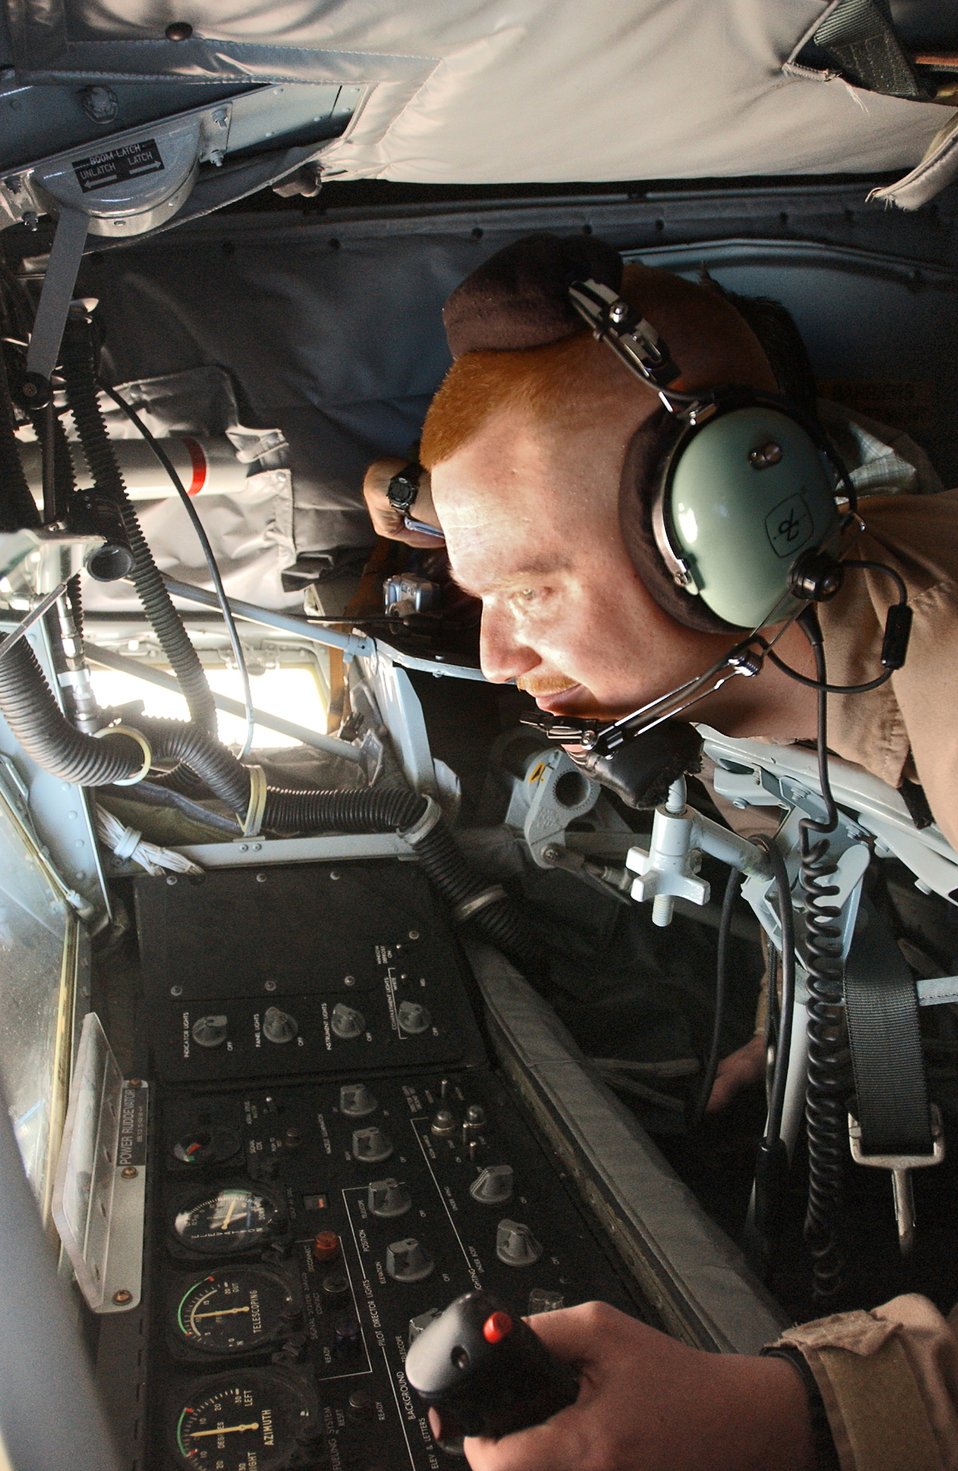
Air refueling missions essential to ground troops

OVER IRAQ -- Airman 1st Class Philip Inmon moves the joystick as a fighter aircraft flies in close for fuel. The boom operator uses the joystick to maneuver a boom that connects his KC-135 Stratotanker with another aircraft, and the transfer of fuel allows the other aircraft to stay airborne longer. Airman Inmon is a KC-135 boom operator and is deployed from McConnell Air Force Base, Kan.